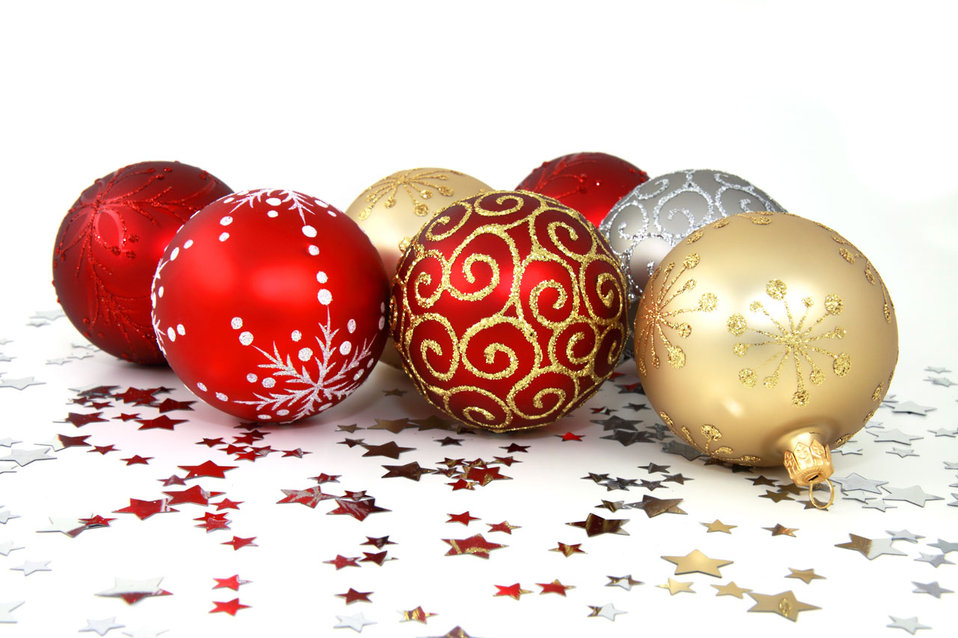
Christmas decoration

Various christmas baubles with silver stars on white background.